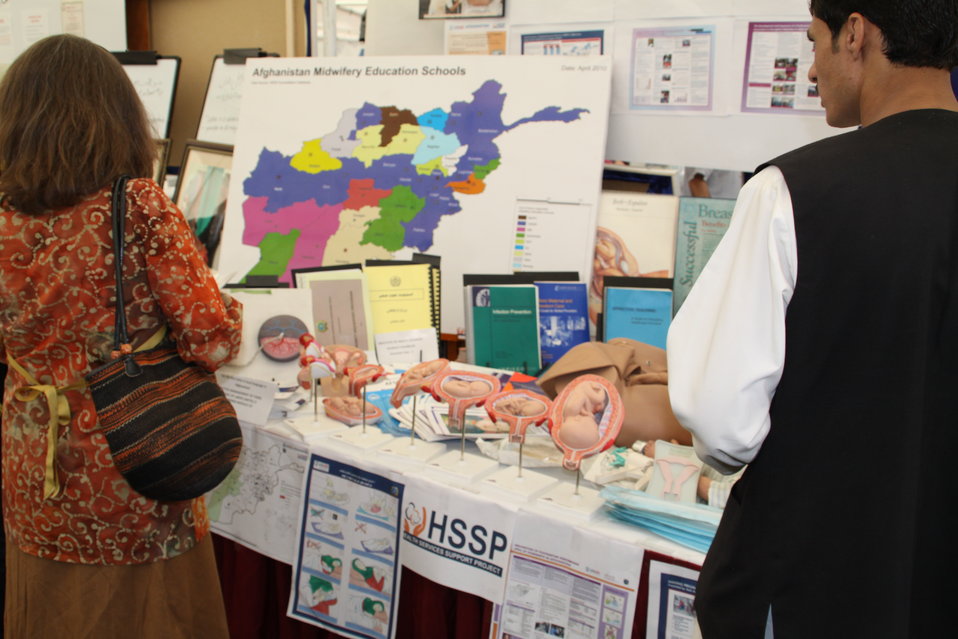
Kabul Official July 4th Celebration